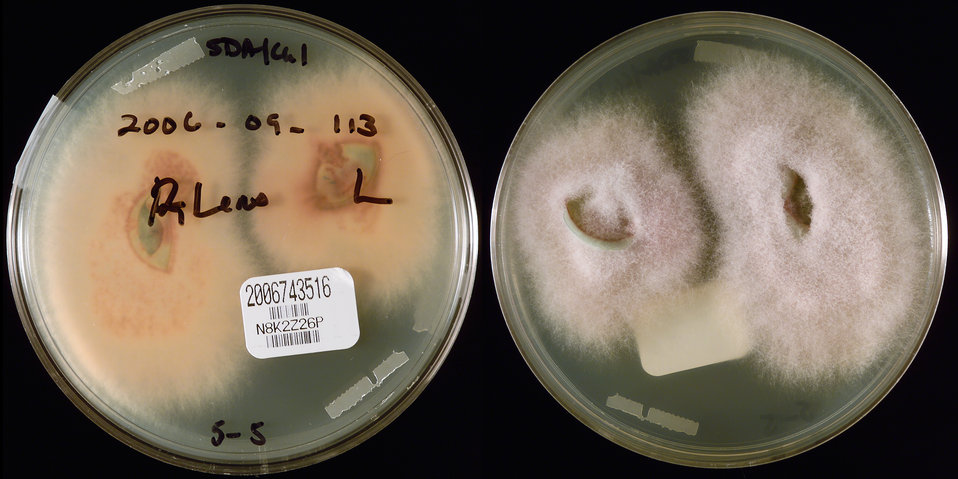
This image depicted two sides of a Petri dish, which had been inoculated with specimens consisting of the right and left contact lenses, visible on the culture medium, obtained from a Minnesota Fusarium keratitis-patient, and had subsequently grown a filamentous colony of Fusarium fujikuroi species complex [FFSC] fungal organisms. The type of agar medium in the case of this specimen was Sabouraud Dextrose (SAB). While it is not unusual for Fusarium to cause keratitis, it was the number of affected individuals, which had increased dramatically, predominantly in persons wearing contact lenses, that had warranted this epidemiologic study. The laboratory received cultures which came from two sources: Fusarium spp. isolated from the eyes of patients with fungal keratitis, and cultures from contact lenses, cases and/or lens solution.